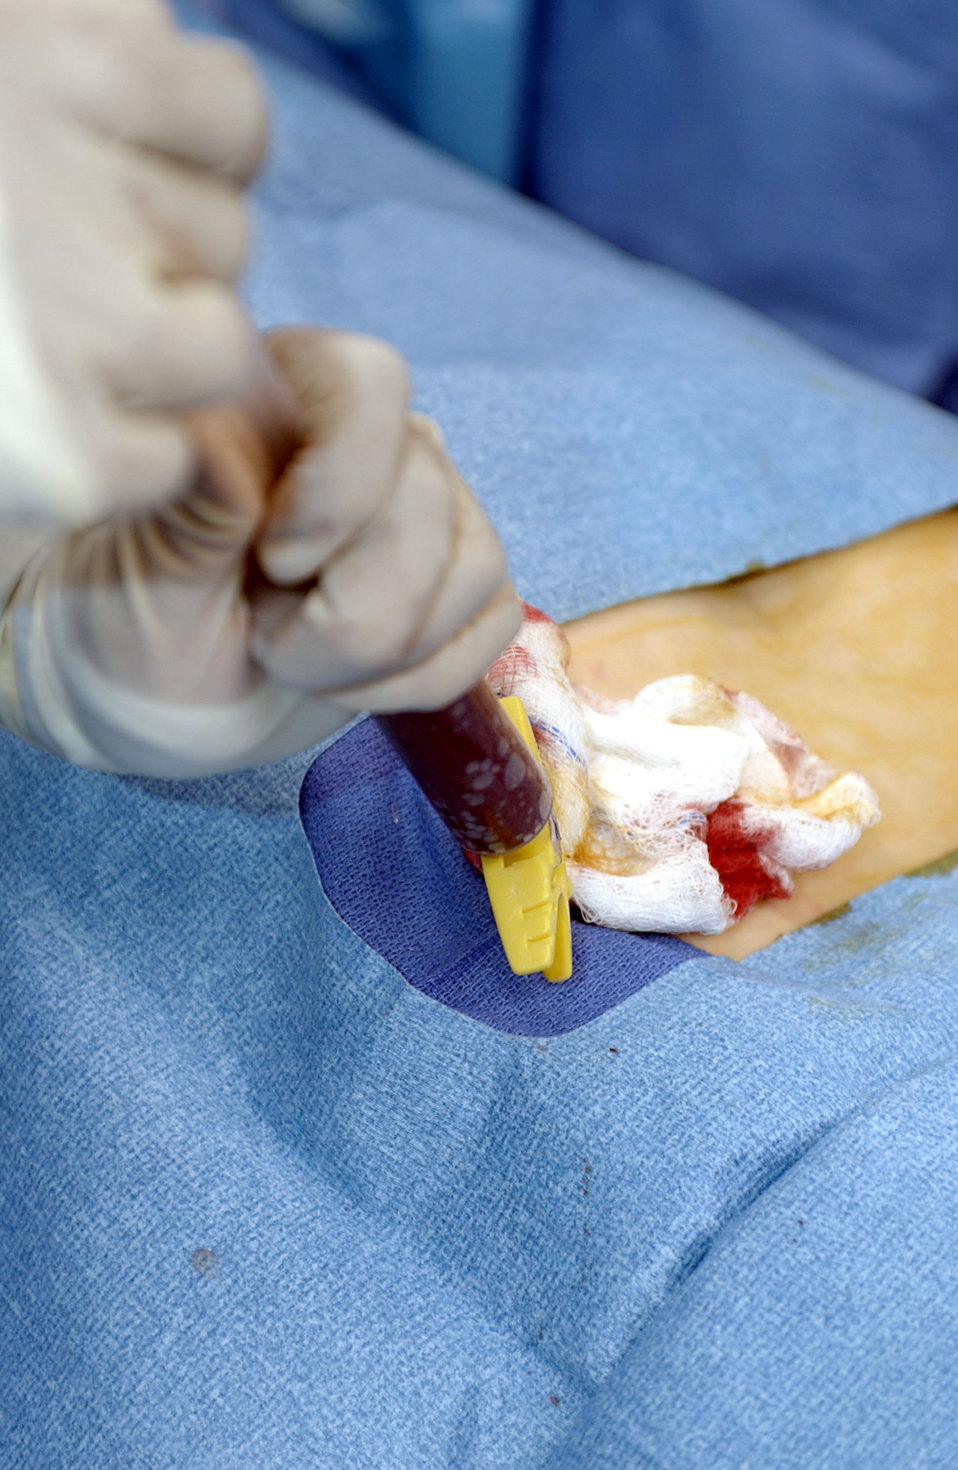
Captain's marrow saves life

WASHINGTON -- Bone marrow is removed from the pelvic bone of Capt. Brent Davis during the donation procedure at Georgetown University Hospital. The marrow Captain Davis donated will aid a 17-year-old boy in his recovery from non-Hodgkin's lymphoma, a type of cancer. Captain Davis is the 910th Airlift Wing public affairs chief at Youngstown Air Reserve Station, Ohio.